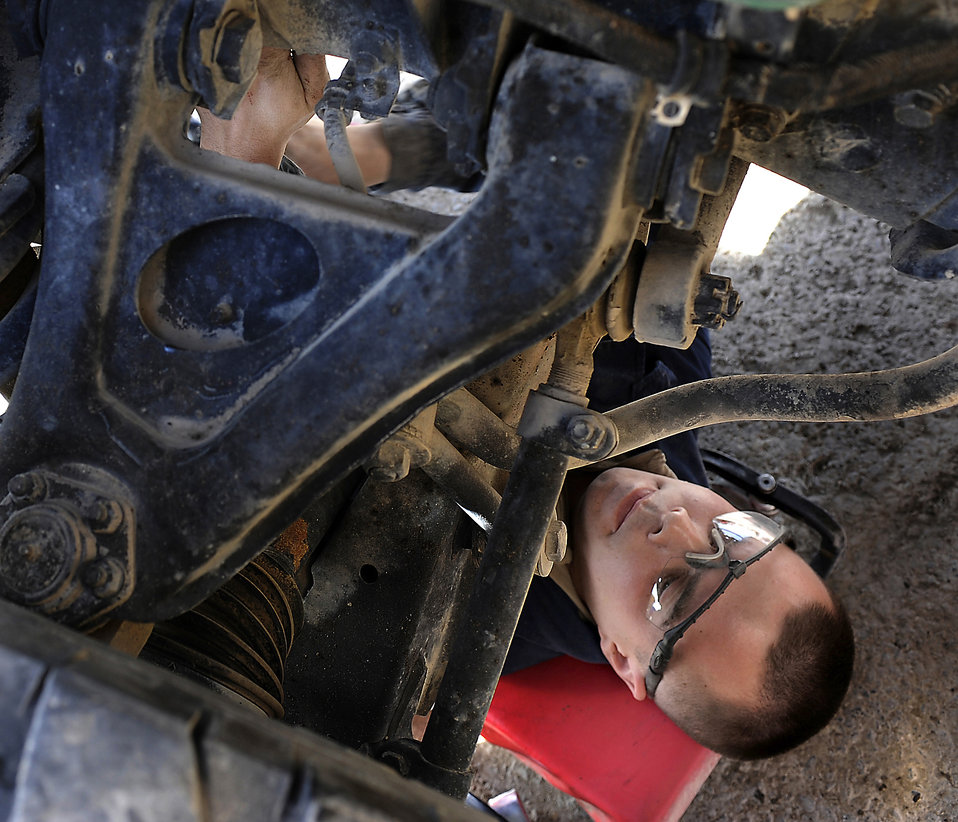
Turning the wrench

Airman 1st Class Josh Edwards performs maintenance on a HUMVEE brake assembly Jan. 27, 2011, at Kandahar Airfield, Afghanistan. Airman Edwards is a vehicle mechanic assigned to the 451st Expeditionary Logistics Readiness Squadron.